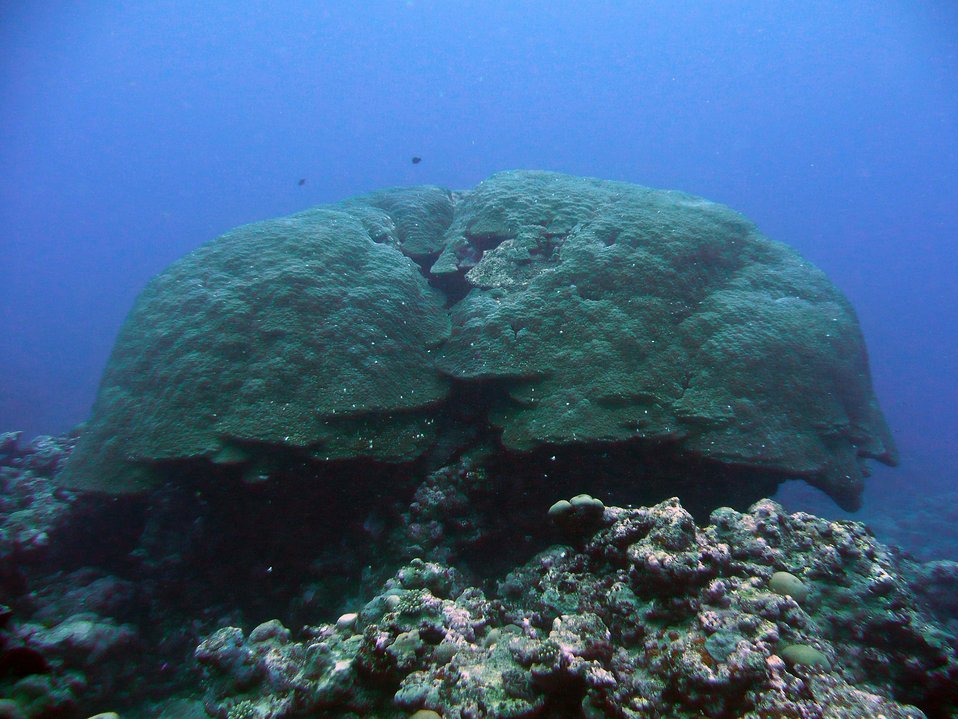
Massive coral (Porites sp.)